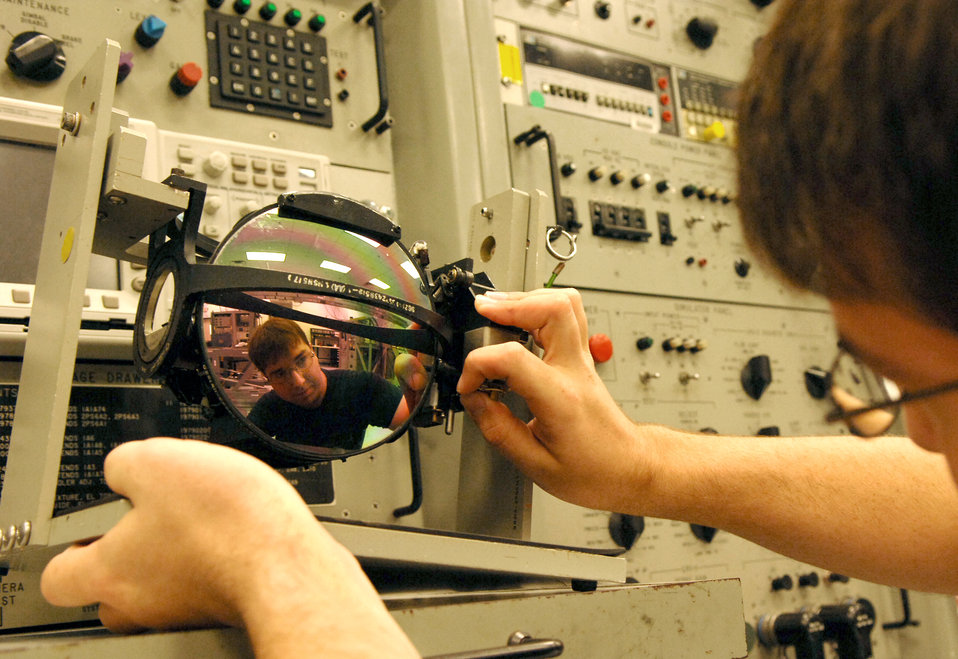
Getting it just right

Staff Sgt. Corey Hughs performs an ops check on an infrared camera July 31 at Hurlburt Field, Fla. Periodic checks ensure equipment will perform properly when needed.